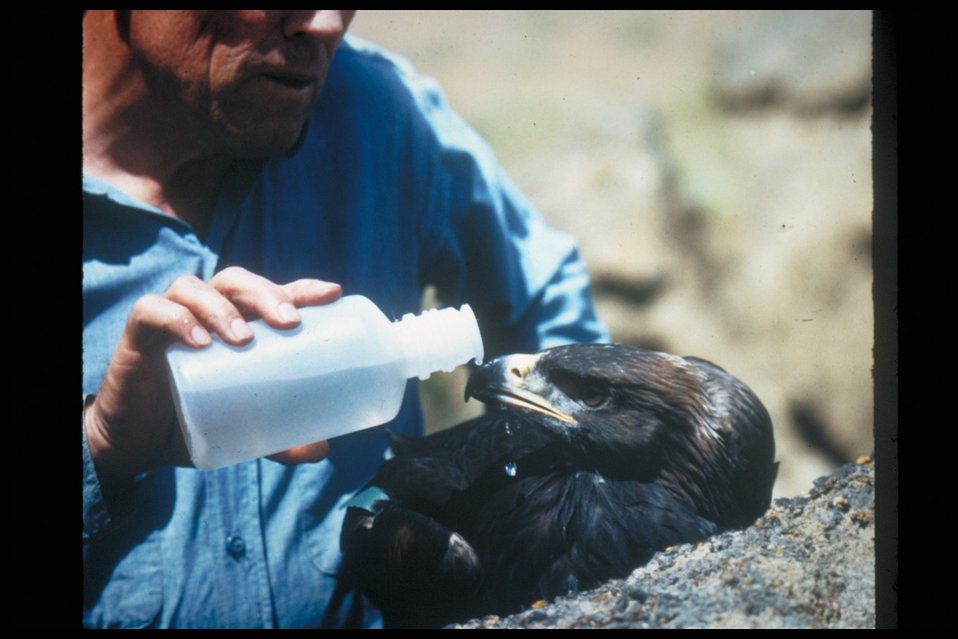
Eagle Birds of Prey National Conservation Area BOP Owyhee Field Office LSRD Lower Snake River District